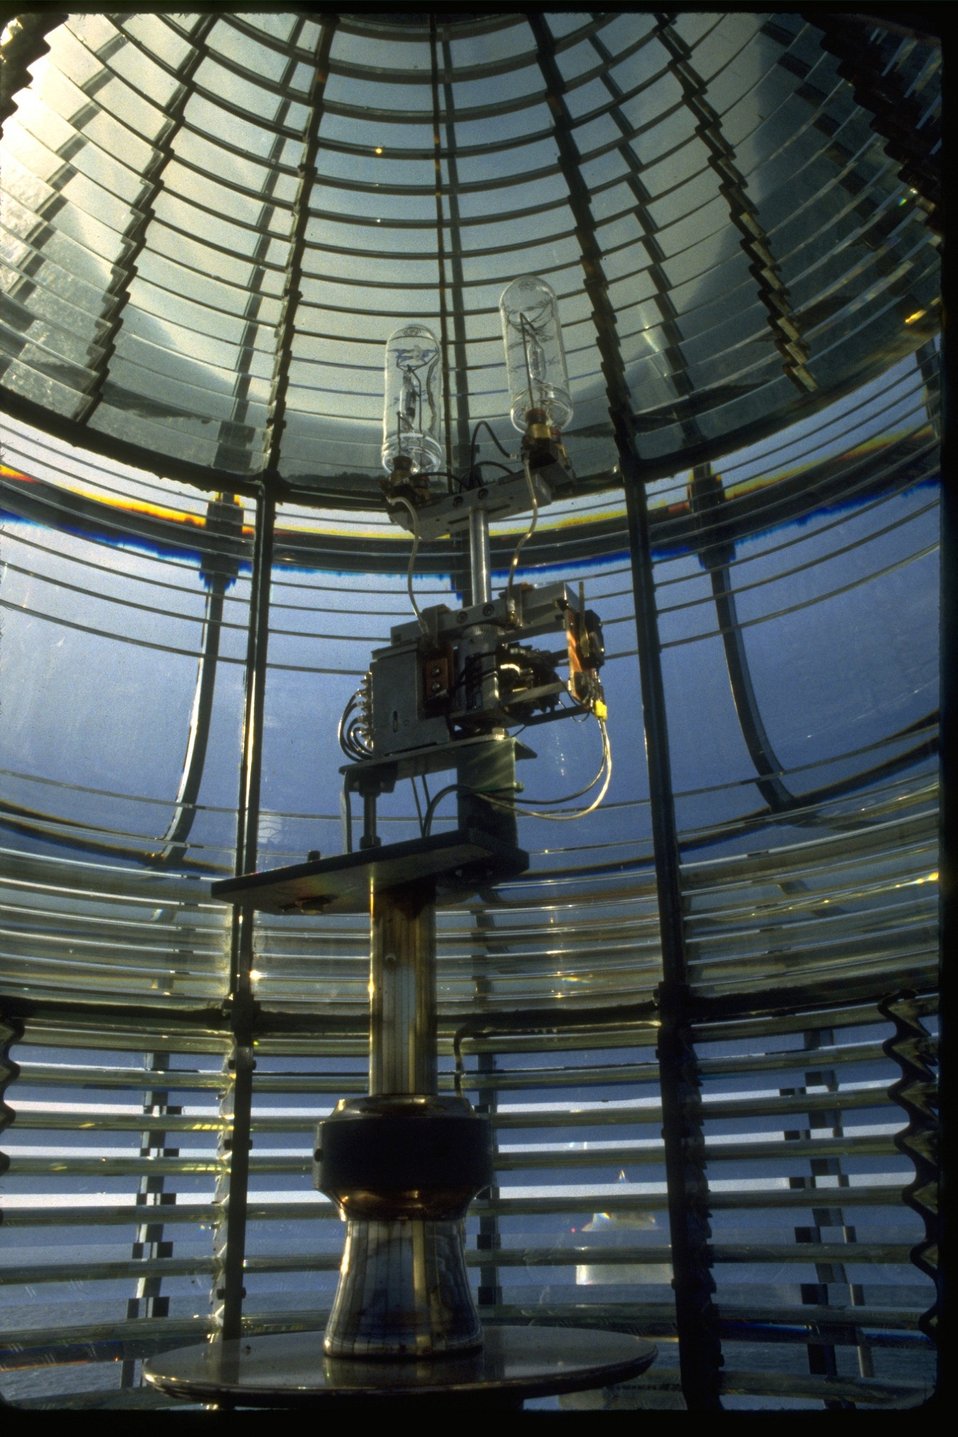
The light bulb (1000 watt lens) on the interior of the Yaquina Head lighthouse.